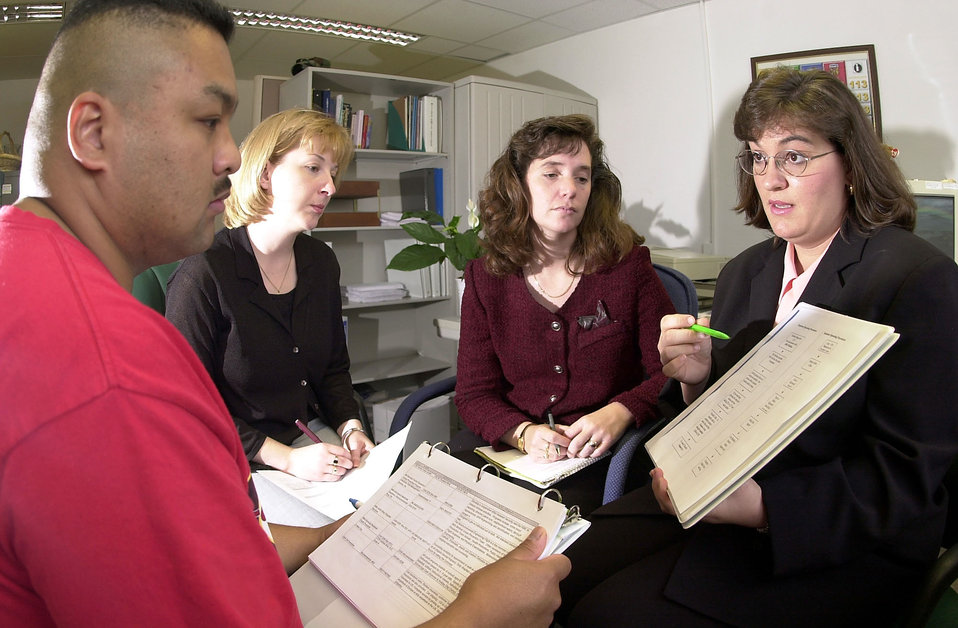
Attentive Ear

RAMSTIEN AIR BASE, Germany -- Kim Vossmer (right), the Ramstein Air Base, Germany, crisis hotline program manager, conducts training with some of the members of the crisis hotline team. Volunteers Staff Sgt. Norm Leo, 623rd Air Mobility Support Squdron; Teresa McBride, Ramstein AB Family Support Center; and Melanie DiAntonio, a Ramstein AB family life support specialist; review the steps they would take to assist a individual in a crisis situation.